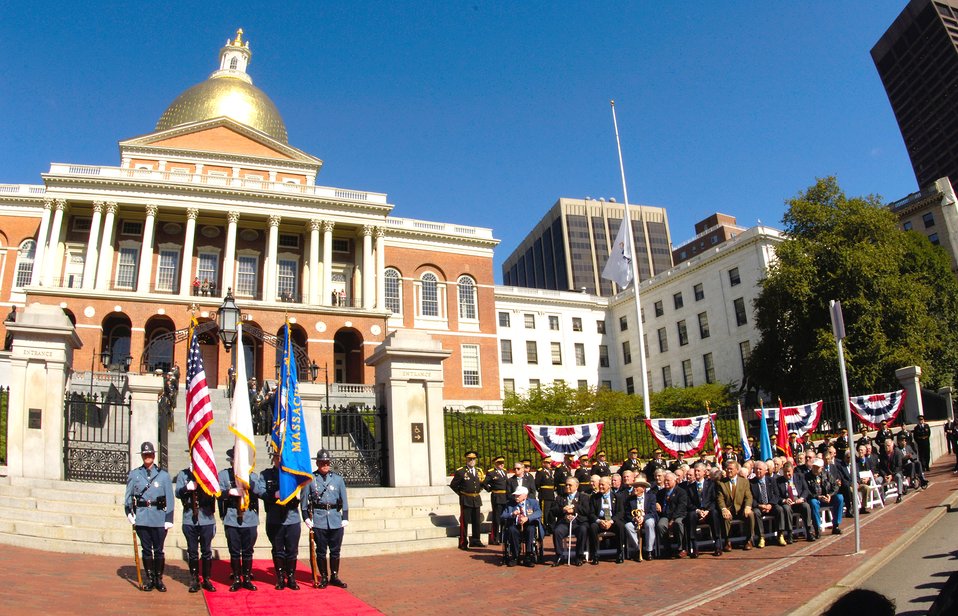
Medal of Honor recipients honored in Boston

A Massachusetts State Police color guard presents the colors Sept. 27 during a special ceremony for more than 70 Medal of Honor recipients in Boston for an annual convention. The ceremony, held in front of the State House, was attended by state leaders and active-duty servicemembers and ROTC cadets of all branches of military service. The Air Force Band of Liberty from Hanscom Air Force Base provided the music accompaniment for the ceremony.